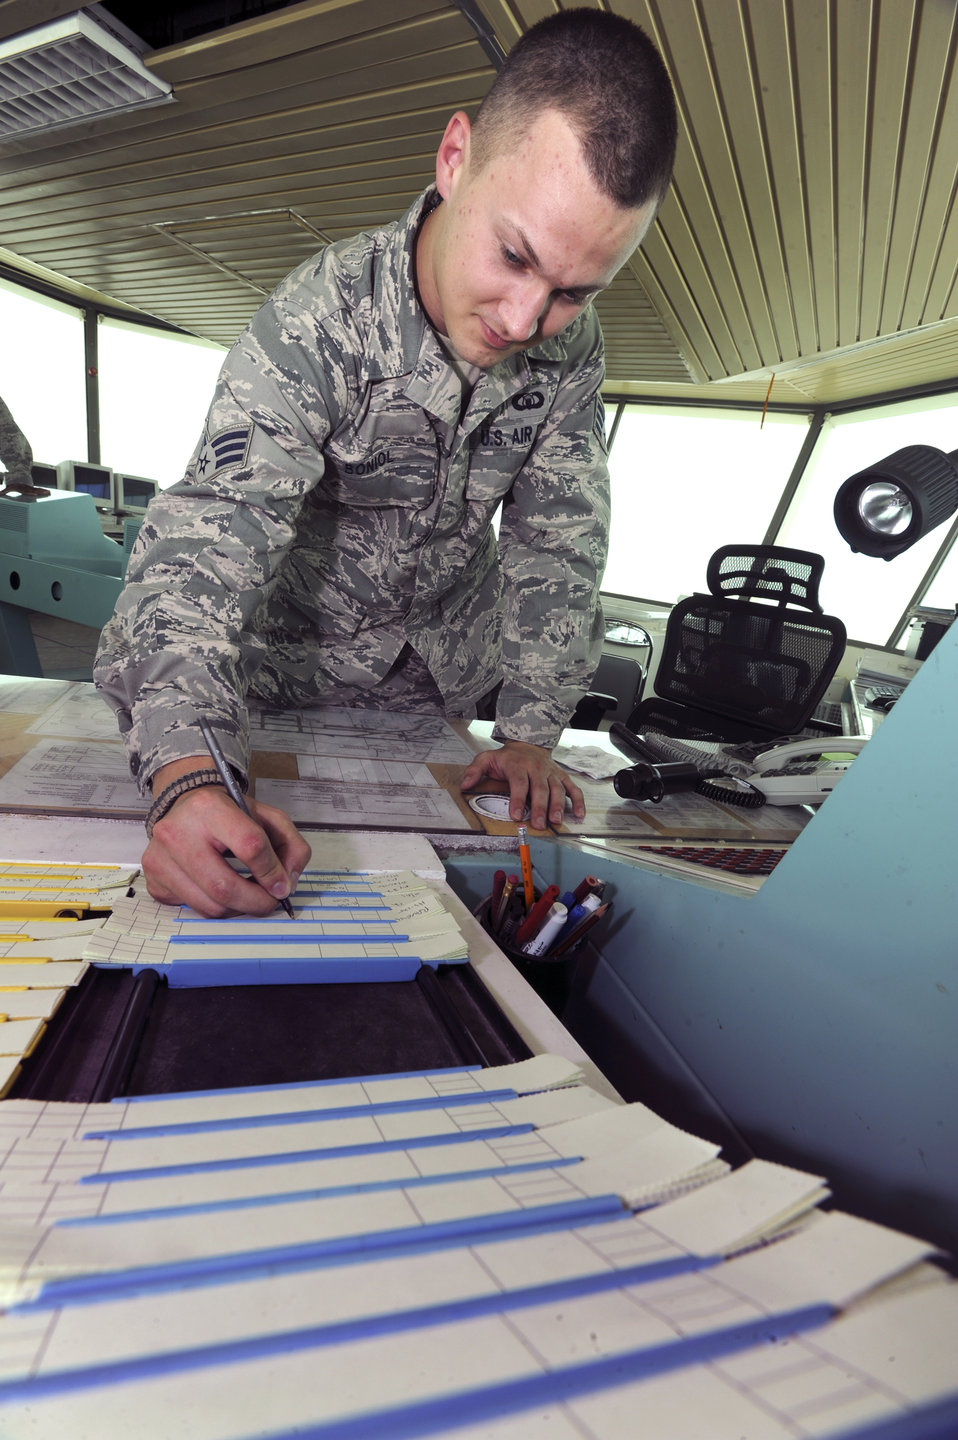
Controllers keep aircraft moving

Senior Airman Stephen Boniol writes status of an aircraft on a flight progress strip May 18, 2009 at an air base in Southwest Asia. The flight progress strips hold aircraft information including departure point, destination and flight altitude. Airman Boniol is a 379th Expeditionary Operations Support Squadron air traffic controller deployed from Alexandria Air National Guard Base, La.